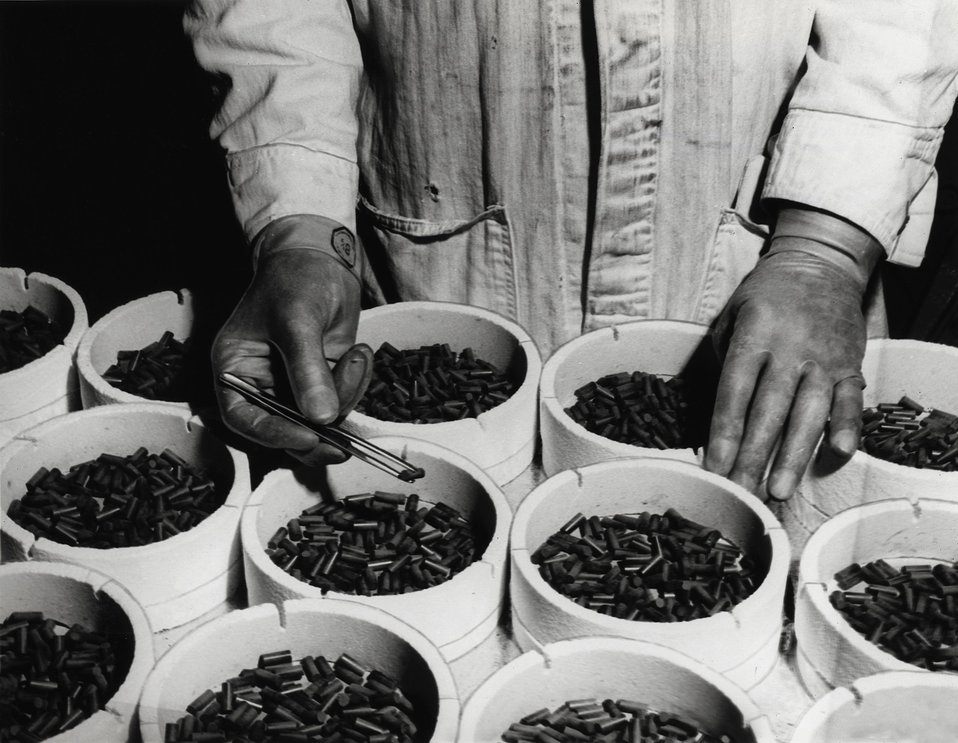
The pellets here are Norton Company's fuel elements made for Argonne.
c.1958